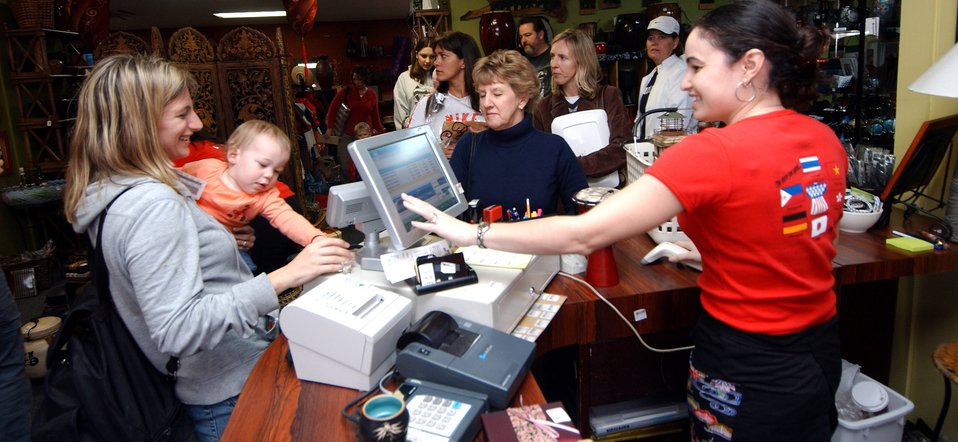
The club that keeps on giving

Kim Freese, a family member from nearby Camp Hansen, does some quick shopping Feb. 1 at the Gift Corner located at Kadena Air Base, Japan. The gift shop is operated by the Kadena Officers' Spouse's Club which donates the profits to a variety of local charities and scholarship programs.